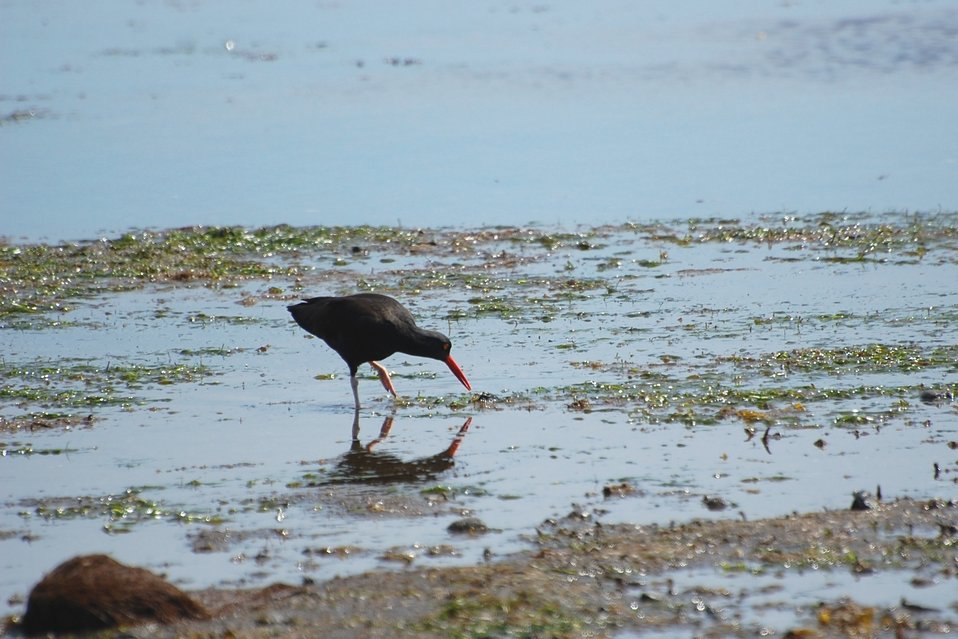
Black Oystercatcher

Kinzarof Lagoon, Izembek National Wildlife Refuge
Photo by Kristine Sowl,
USFWS, Public Domain